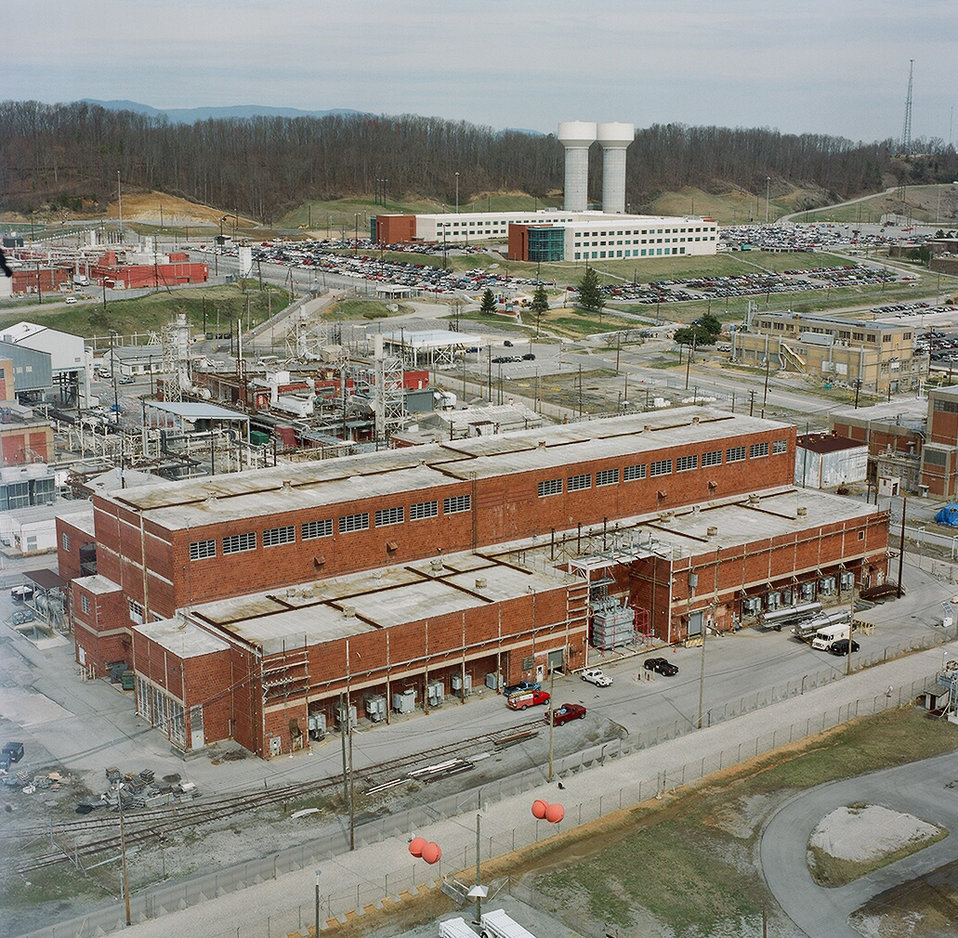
Oak Ridge work

Recovery Act workers will conduct characterization work and remove legacy materials at the Beta 3 facility at the Y-12 National Security Complex.